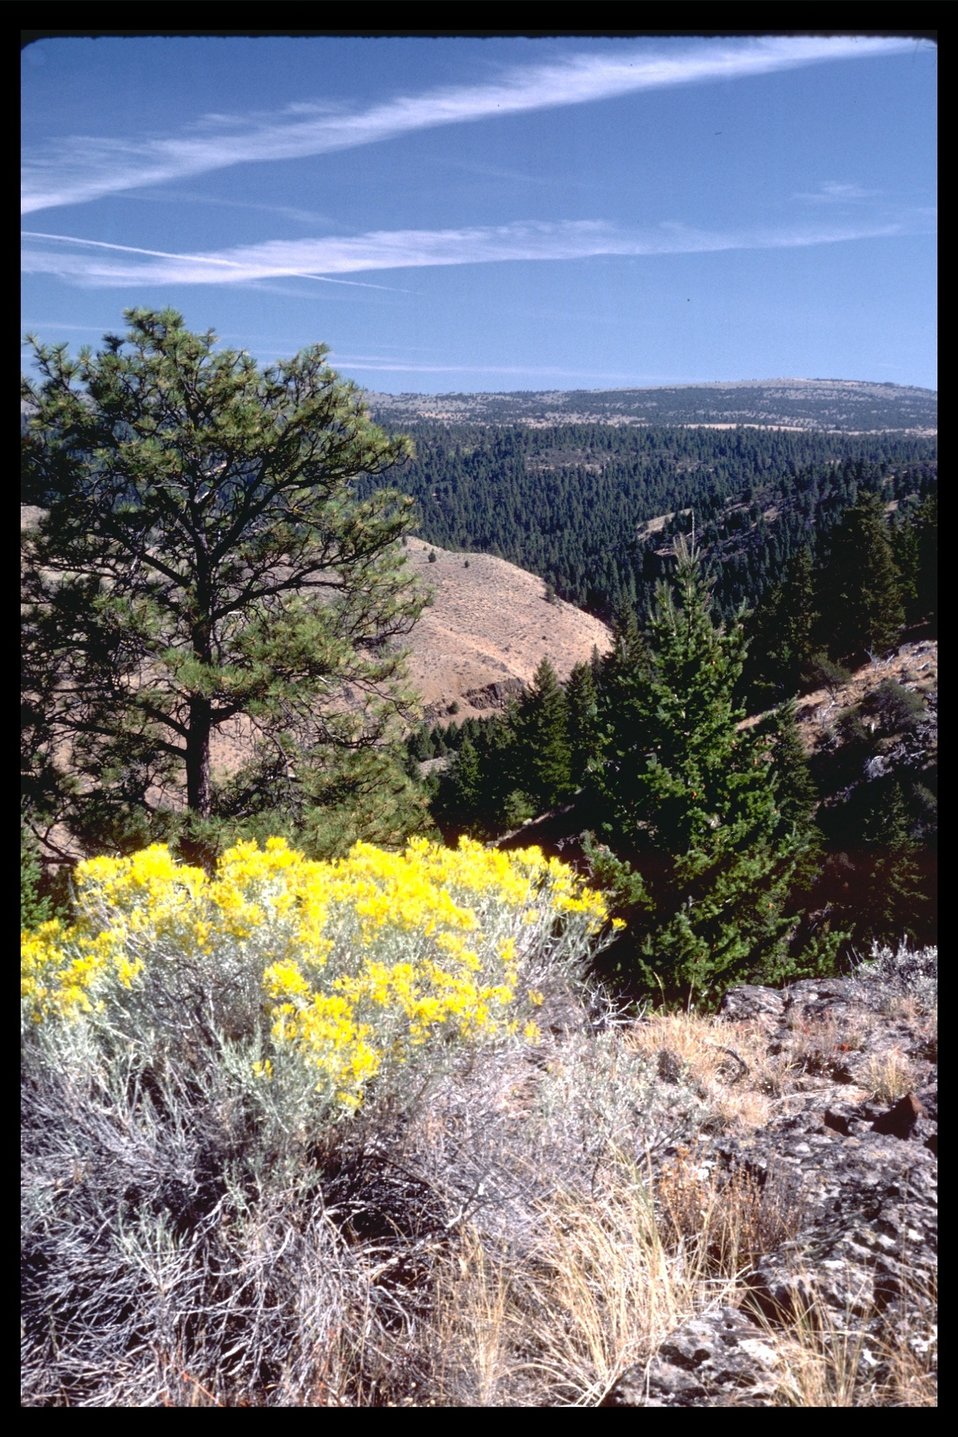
Bucket Creek drainage from rim. (2-14)